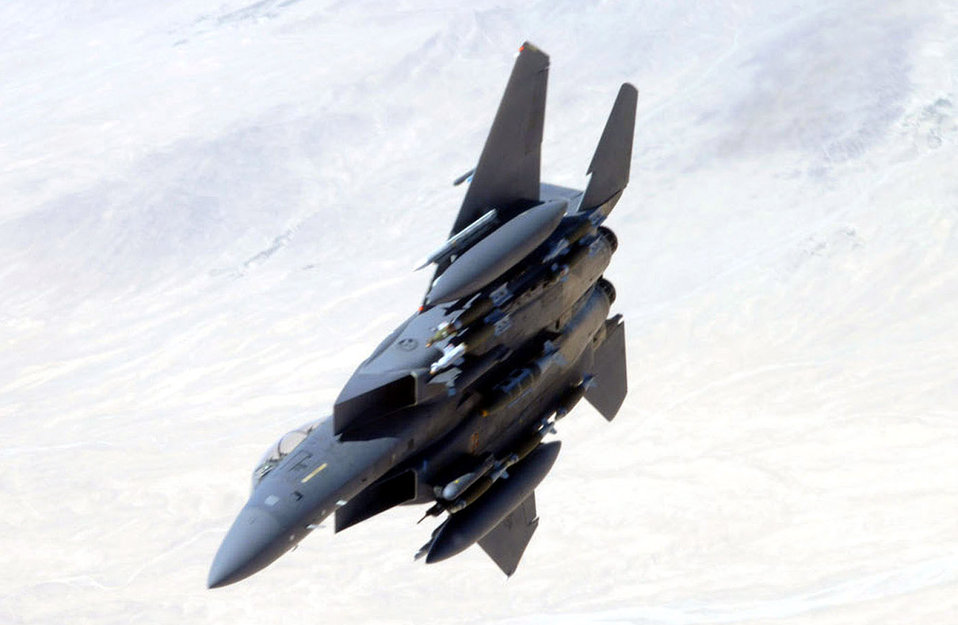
Airpower Summary

F-15E Strike Eagles, like this one, brought air power to areas of Afghanistan July 30, hitting multiple enemy targets in Gereshk and Garmsir.